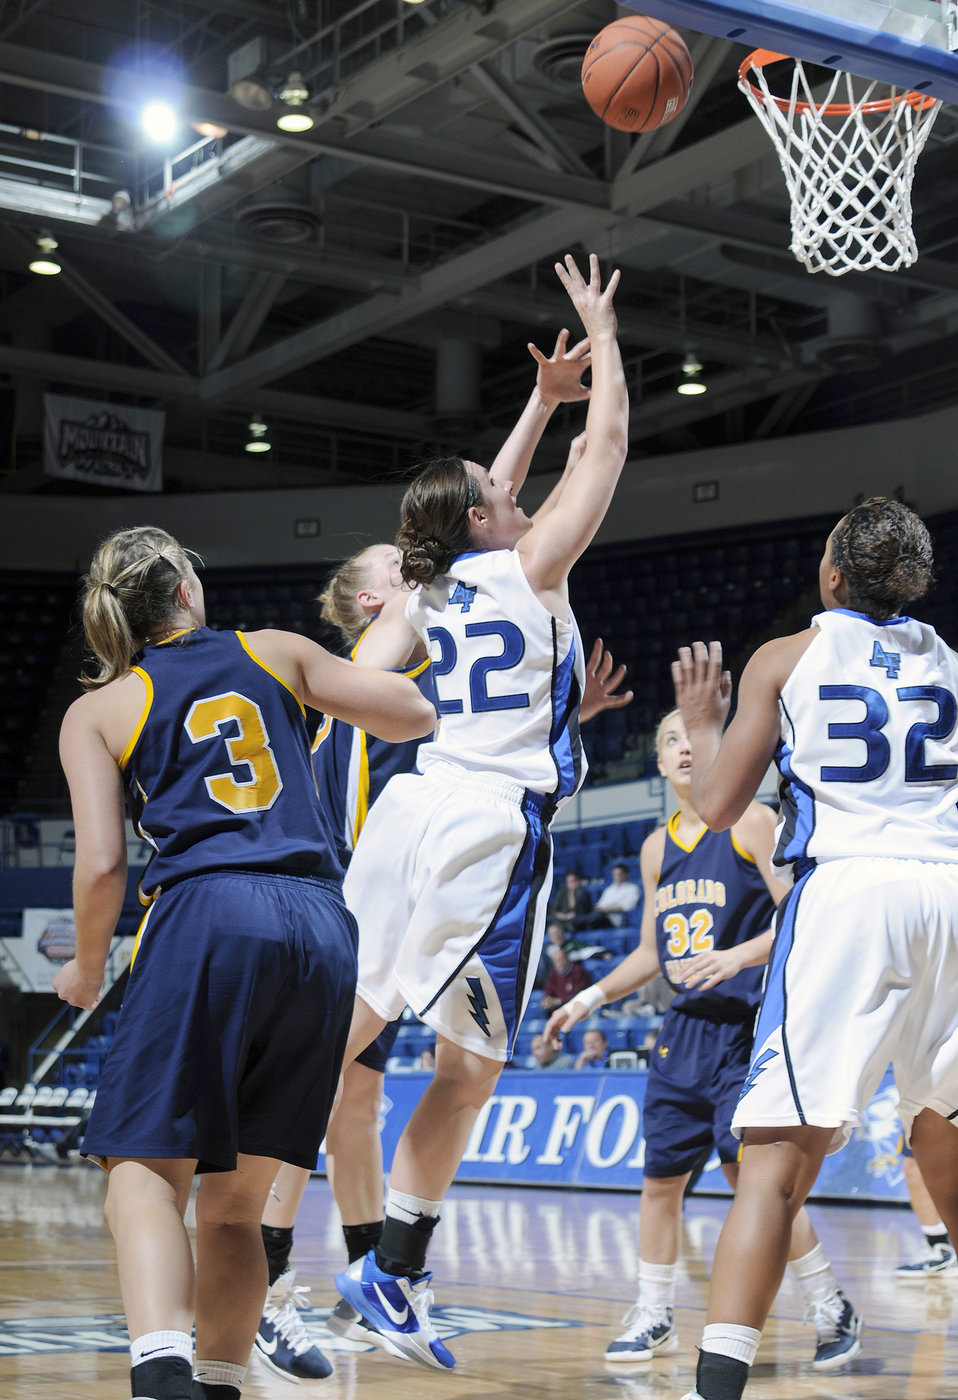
Women's basketball team defeats CCU Lady Cougars

Falcon team captain Raimee Beck goes in for 2 of her 15 points as the Falcons defeated Colorado Christian University 68-58 Nov 28, 2010, at Air Force Academy's Clune Arena in Colorado Springs, Colo.